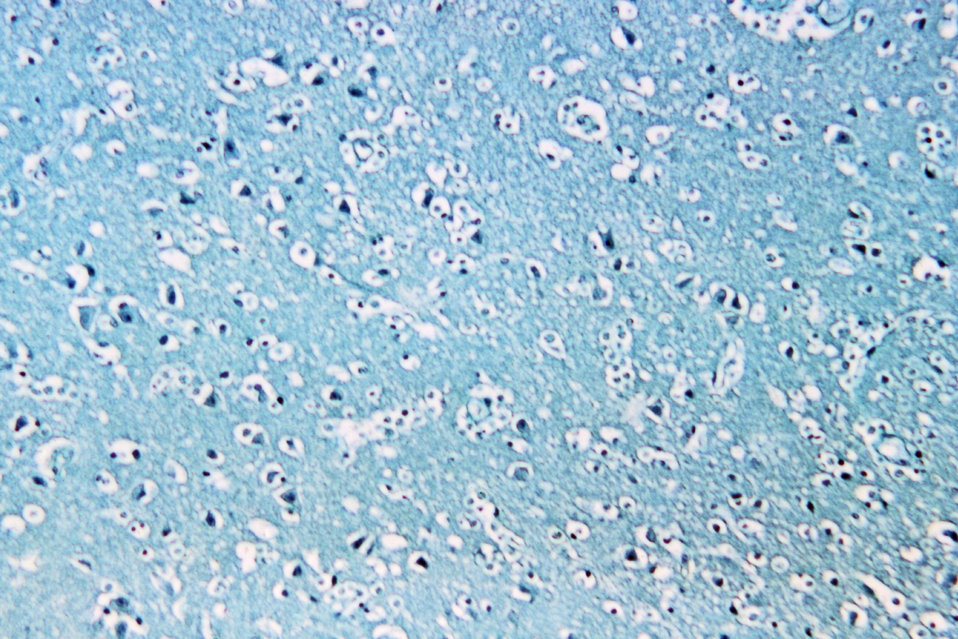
Magnified 125x, this trichrome-stained photomicrograph of a brain tissue specimen depicts the cytoarchitectural changes associated with a free-living, Naegleria fowleri, amebic infection. When free-living amebae infect the brain or spinal cord, the condition is known as primary amebic meningoenceohalitis, or PAM. Free-living amebae belonging to the genera Acanthamoeba, Balamuthia, and Naegleria are important causes of disease in humans and animals, though only one specie of Naegleria, Naegleria fowleri, causes disease in humans.